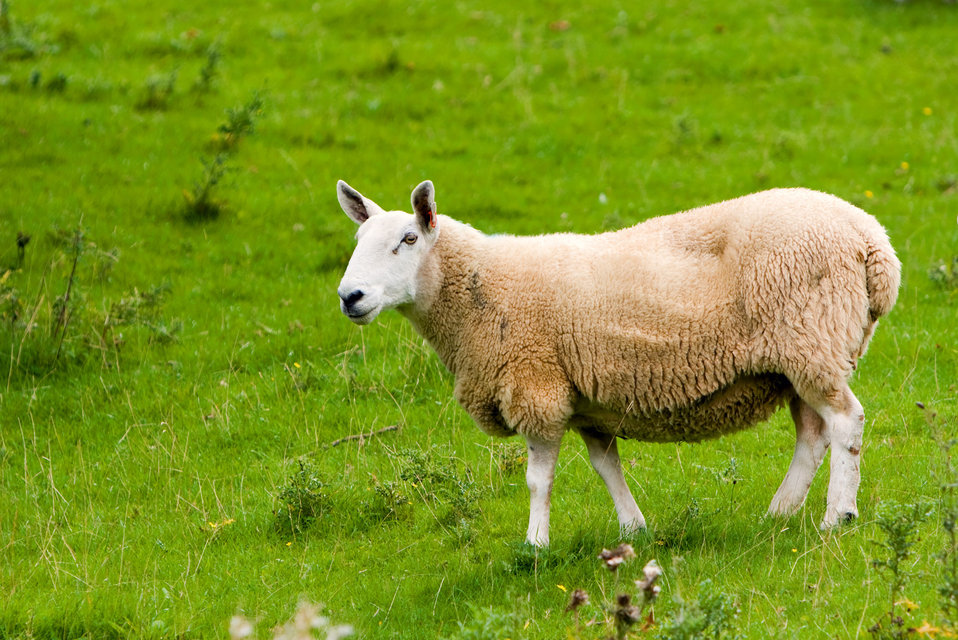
Sheep in the green field.